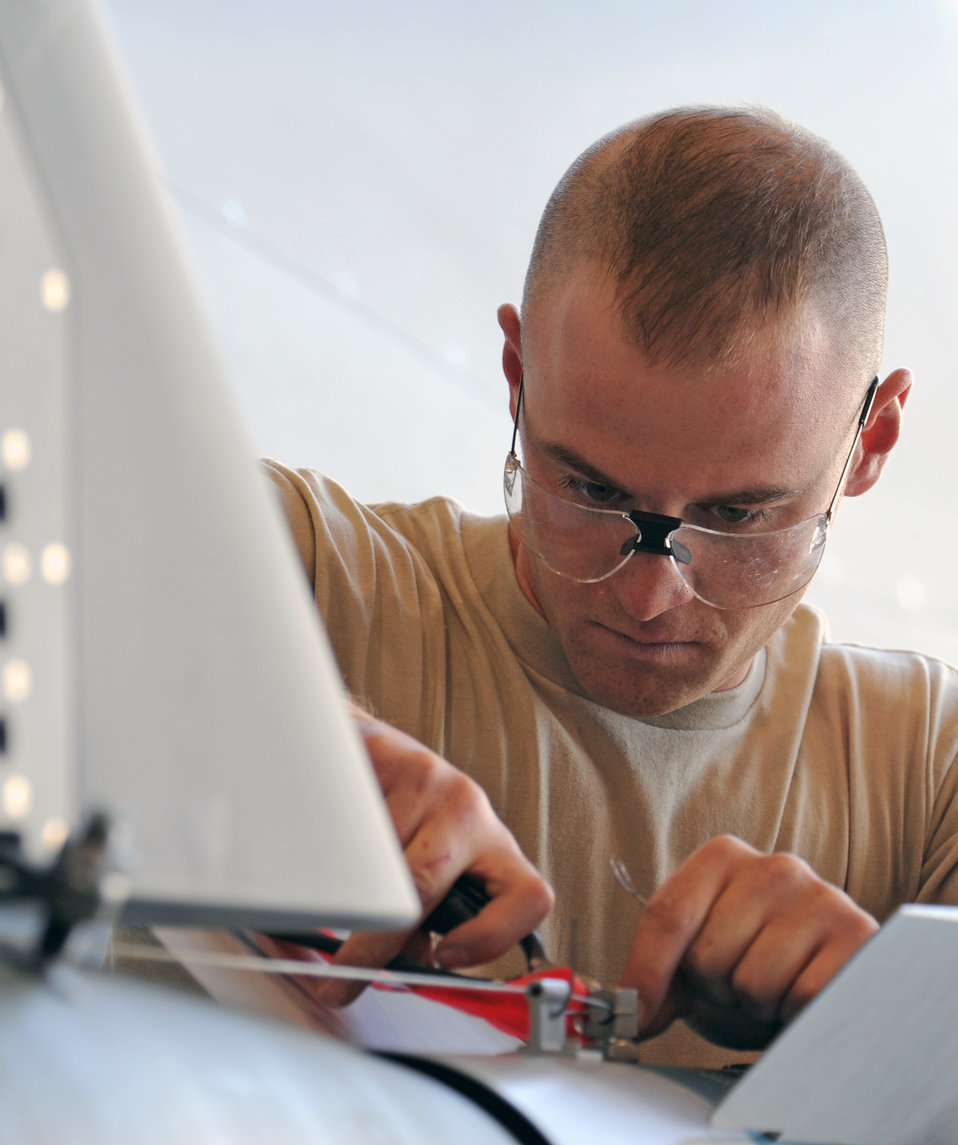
Training for unmanned aircraft systems

Senior Airman Jason Atwell fastens wires onto a guided bomb unit-12 Paveway II laser-guided bomb during weapons load training April 22 at Creech Air Force Base, Nev. MQ-9 Reaper load crewmembers were conducting monthly training to maintain their qualifications on the airframe. Airman Atwell is a MQ-9 Reaper weapons loader assigned to the 432nd Aircraft Maintenance Squadron.